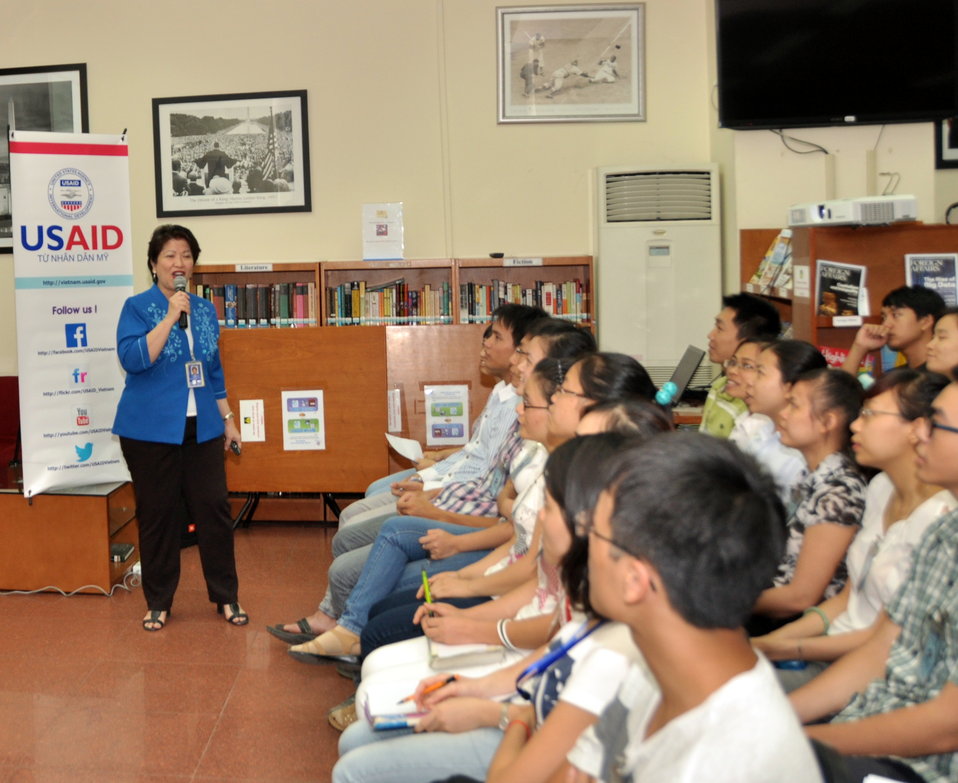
Climate Change Talk at the American Center

Hanoi, May 28, 2013.